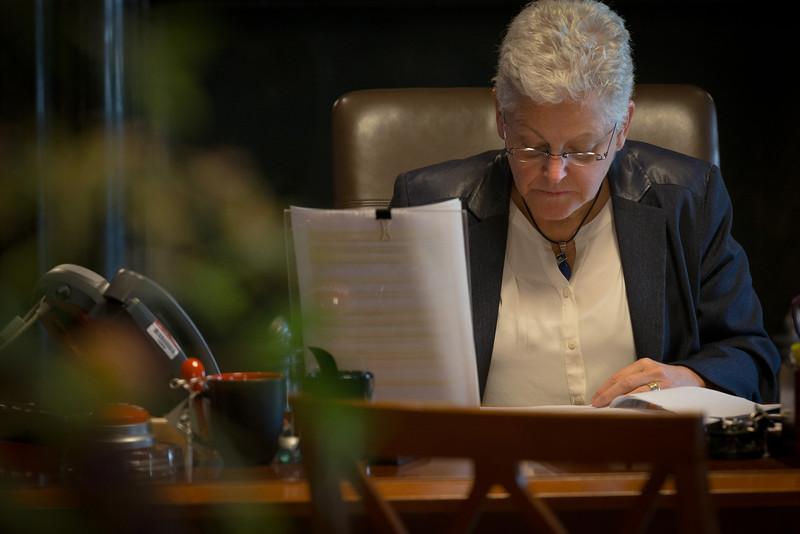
Day in the Life - June 2, 2014

On Monday, the EPA announced its Clean Power Plan, a proposal which for the first time cuts carbon pollution from existing power plants, the single largest source of carbon pollution in the United States. The proposal will protect public health, move the United States toward a cleaner environment and fight climate change. Here is a behind-the-scenes look at how EPA Administrator Gina McCarthy spent the historic day.

9:14 am - EPA Administrator Gina McCarthy begins her day with some last minute preparation in advance of announcing the Clean Power Plan and its flexible, achievable reductions to carbon pollution. (1/15)